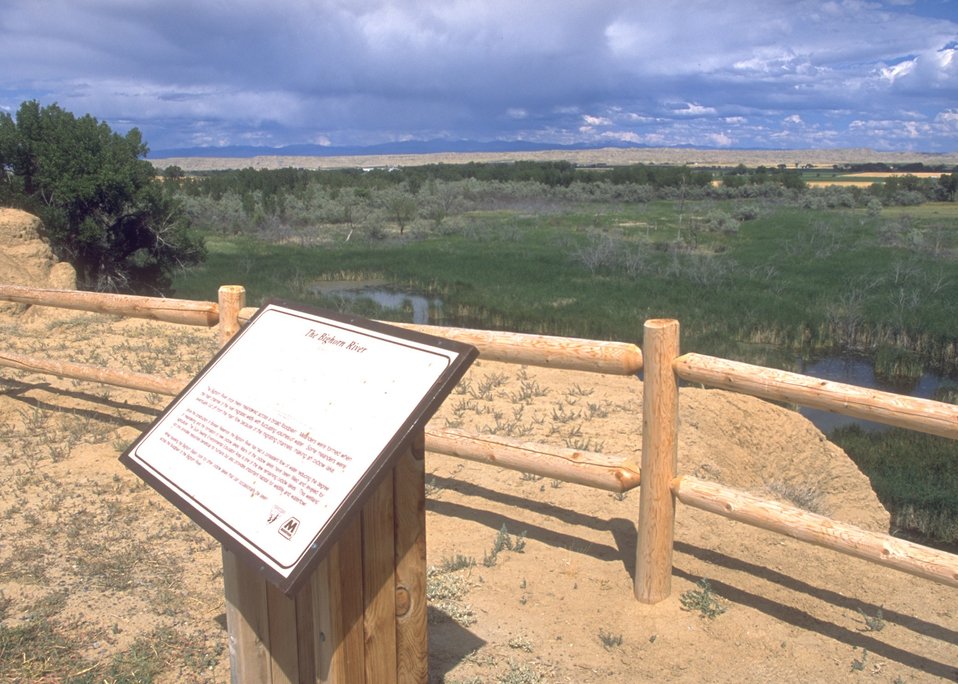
Duck Swamp Interpretive Area, Worland Field Office.